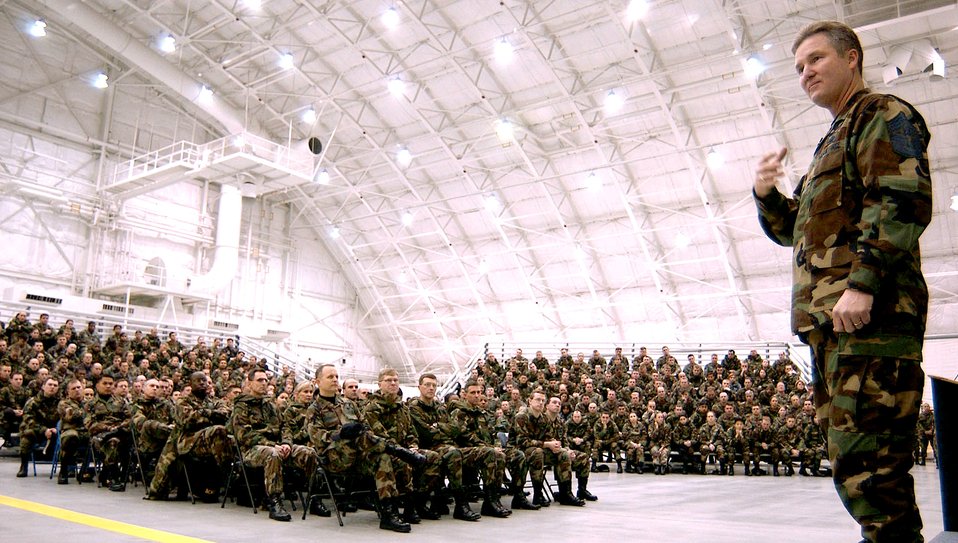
Our airlift is what makes us a global power

MCCHORD AIR FORCE BASE, Wash. -- Chief Master Sgt. of the Air Force Gerald R. Murray speaks to Airmen here Jan. 11. During his three-day trip to McChord, the chief discussed enlisted issues concerning today's Airmen.